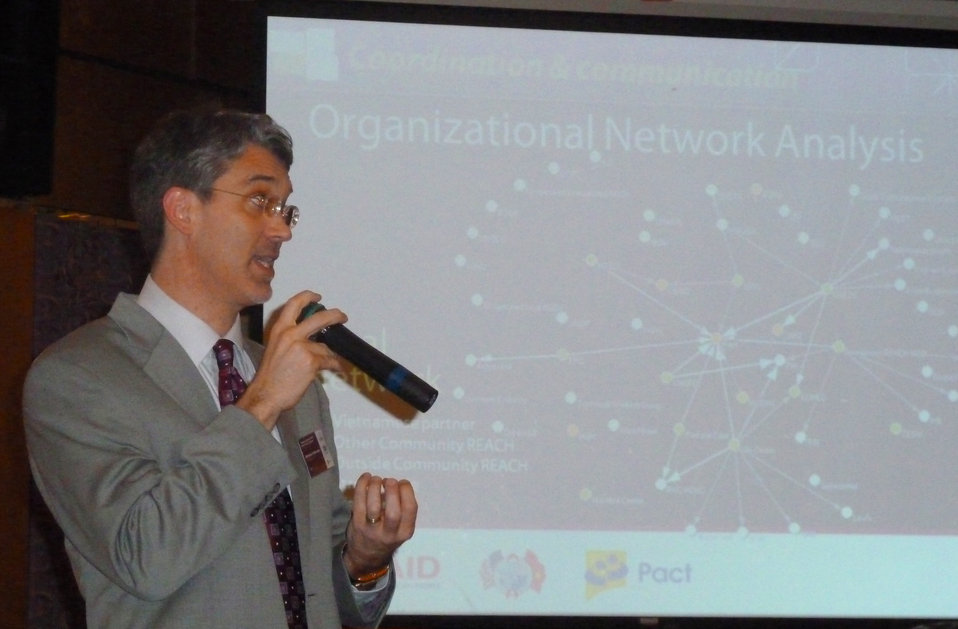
Pact Country Director Matthew Tiedemann presents results at the Community REACH workshop

Community REACH project close-out with USAID and implementing partner, Pact